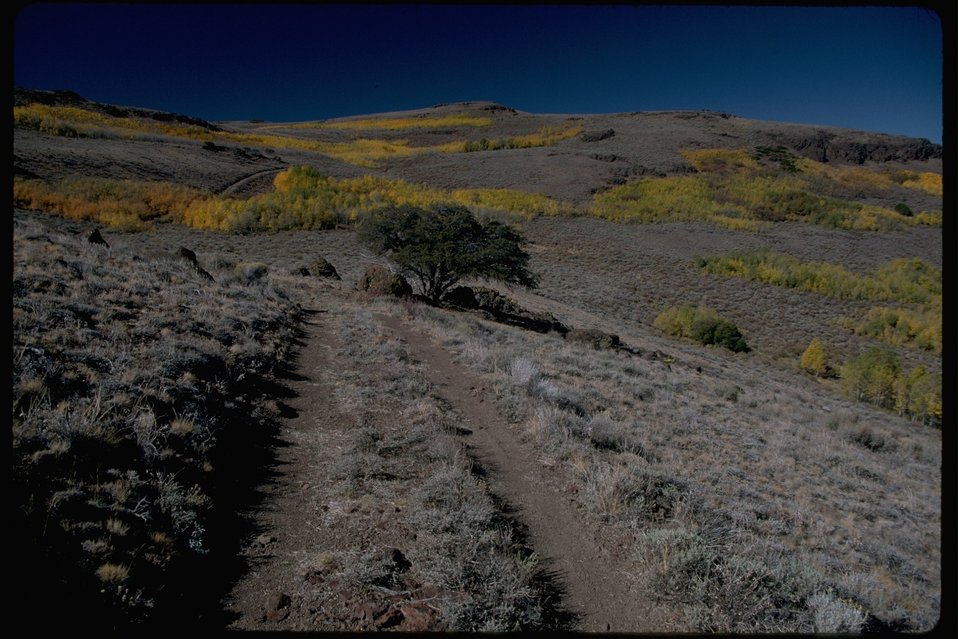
Willow Creek Wilderness Study Area. Trees are turning to fall colors. WSA OR 3-152.